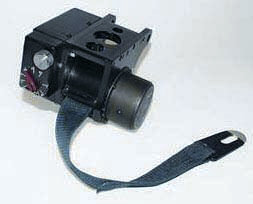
Restraint system improves aircrew safety

The universal mobile aircrew restraint system shown could reduce aircrew injuries. The new restraint system is based on the same technology that brings a speeding roller coaster to a smooth stop.